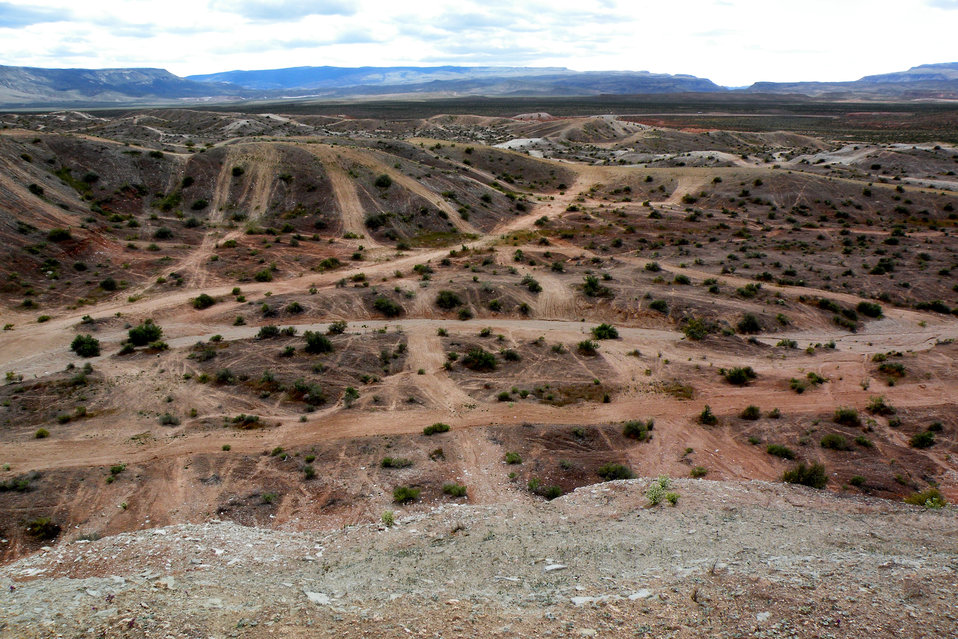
Dwarf bearclaw poppy (Arctomecon humilis) - Habitat Impacts

Impacts from OHV activities on dwarf bearclaw poppy habitat in Washington County, UT. The dwarf bearclaw poppy is endemic to Washington County. It is restricted to clay soils of the Moenkopi Formation. It occurs on rolling hills and bluffs in sparsely-vegetated desert shrub communities between 2,700 ft. and 3,330 ft. in elevation. It is listed endangered